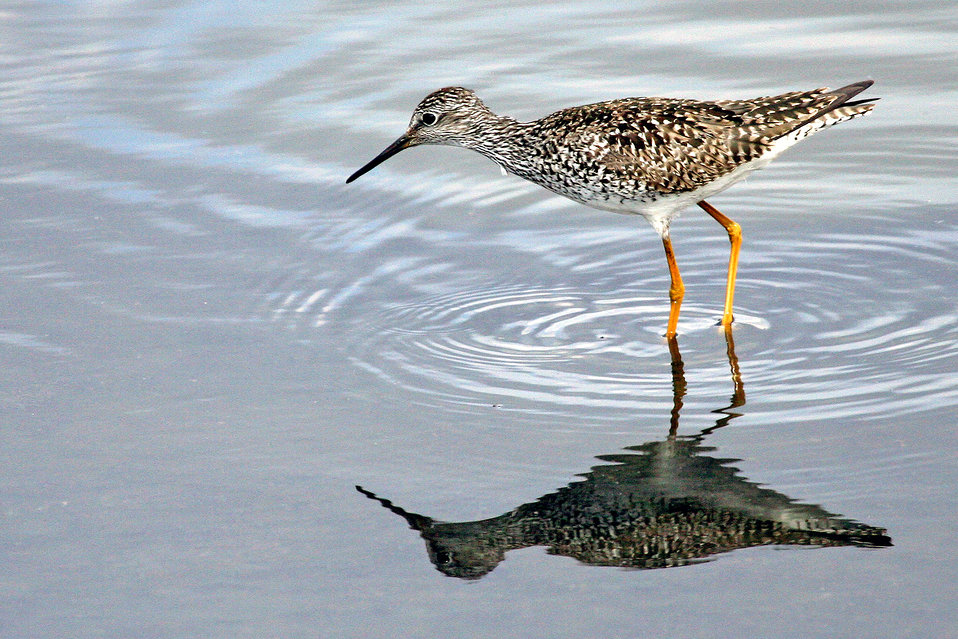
Lesser Yellowlegs